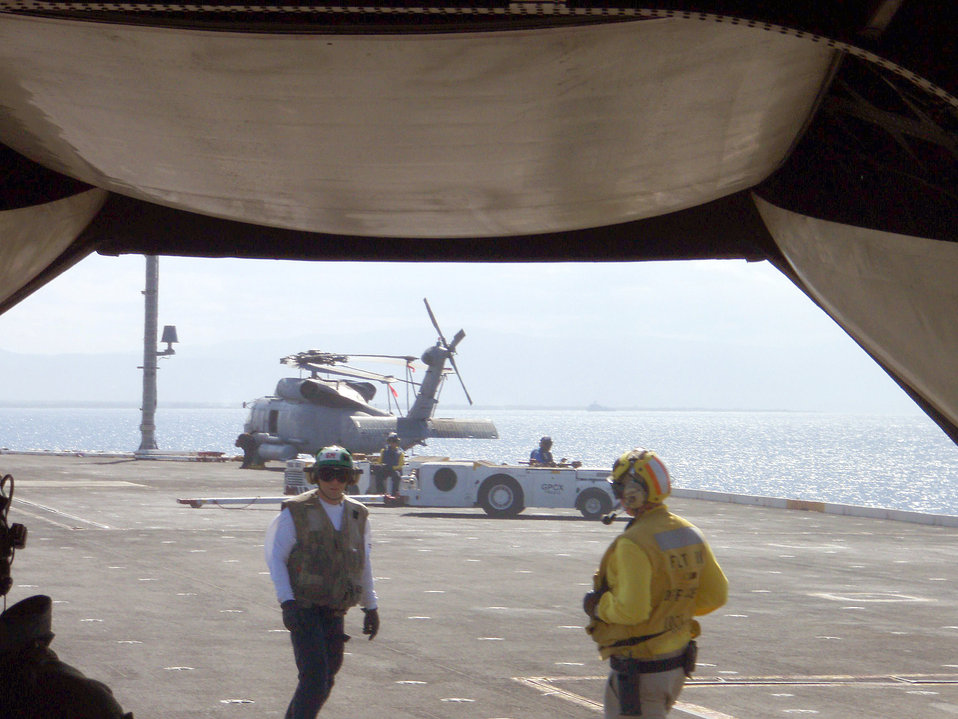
Photographed by U.S. Public Health Service (USPHS) Lt. Cmdr. Gary Brunette, this was a view from inside the transport plane used to carry the corpsmen to the deck of the Nimitz class supercarrier, USS Carl Vinson (CVN-70), from which the corpsmen would be transported by helicopter to the aircraft carrier, USS Bataan, in response to the 2010 earthquake, which devastated Haiti.